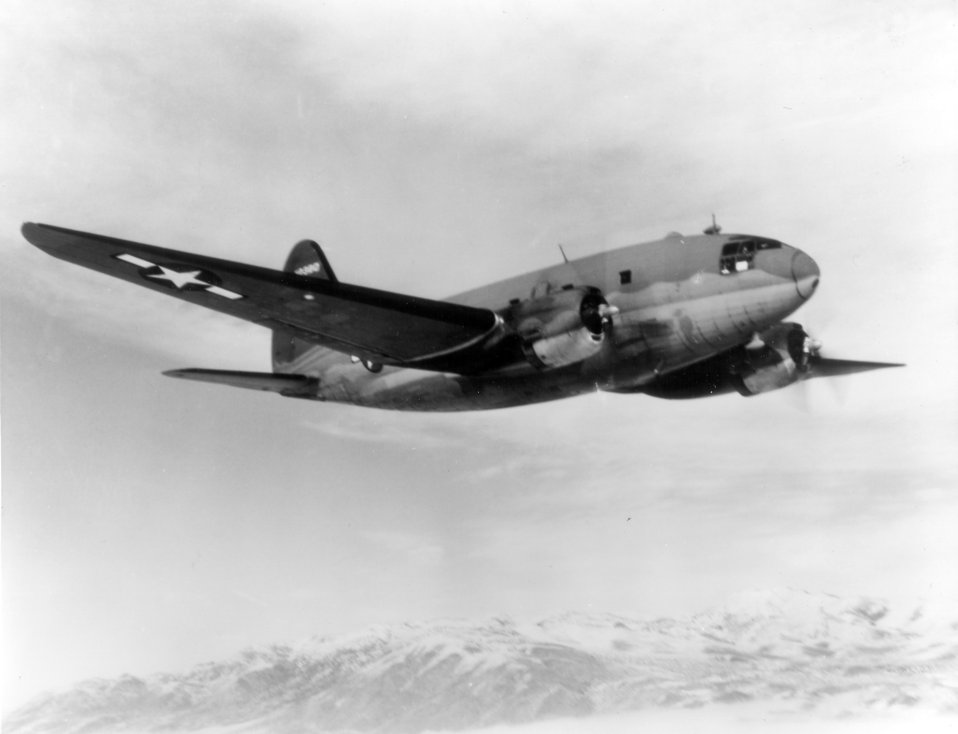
C-46

1940's -- The Curtiss C-46 Commando in flight